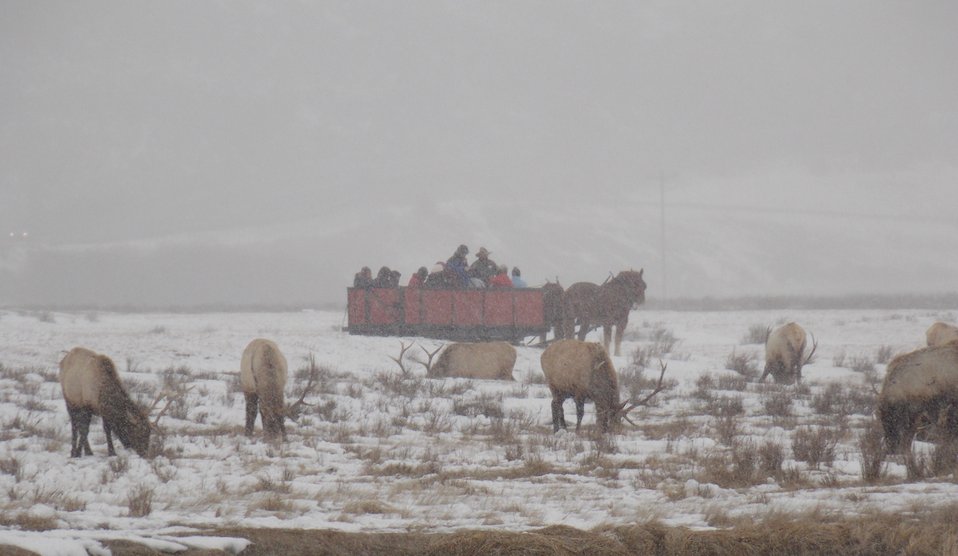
Neither Rain Nor Snow Nor Sleet ...

Regardless of the weather, Refuge sleigh rides are always popular.

Credit: USFWS / Jessie Stirling, National Elk Refuge winter naturalist